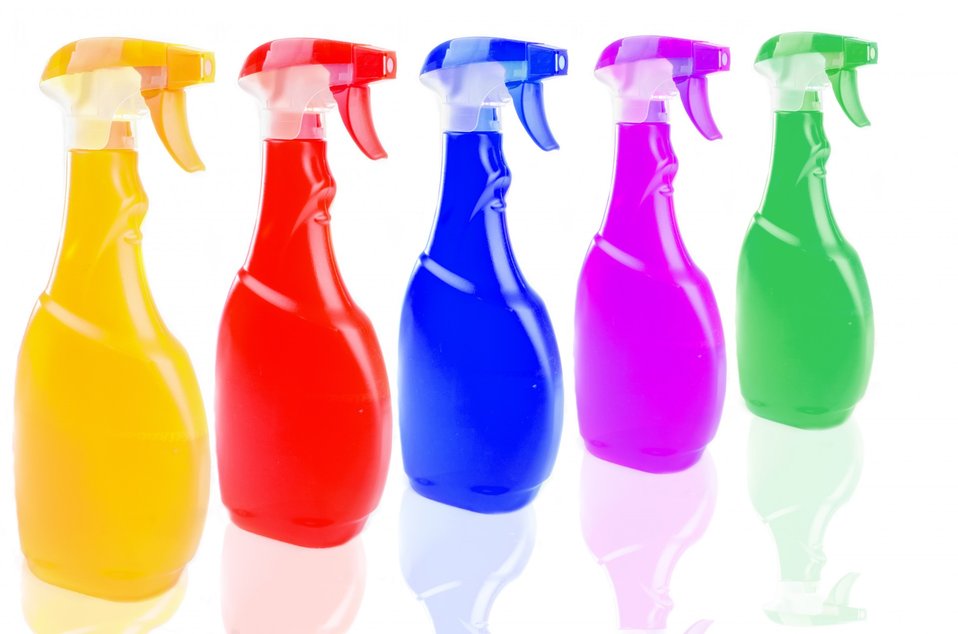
Spray bottles isolated on the white background.